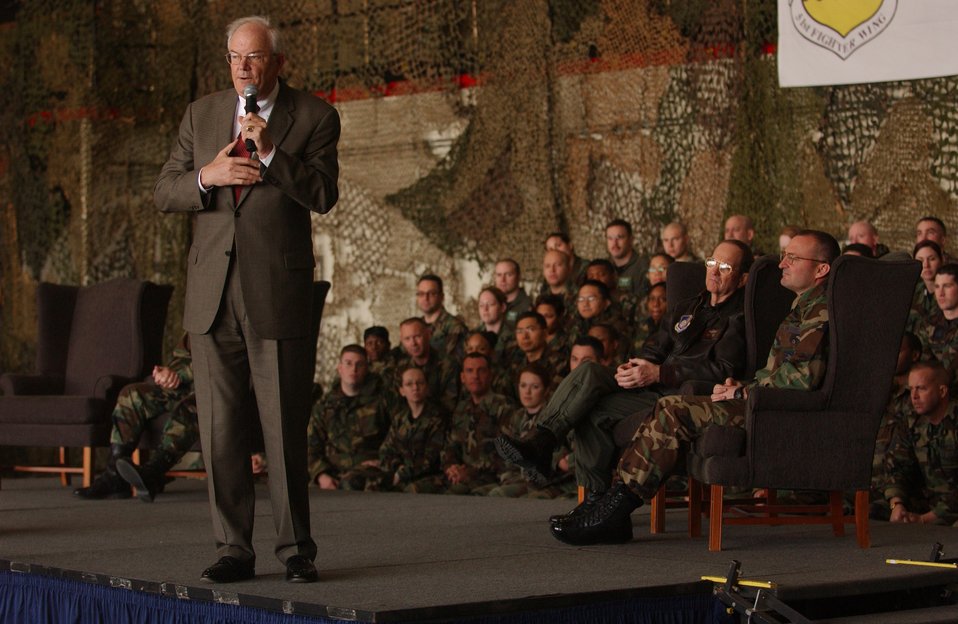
Secretary of the Air Force visits Korea

Secretary of the Air Force Michael W. Wynne speaks to Airmen Tuesday, March 21, 2006, during his visit to Osan Air Base, South Korea.